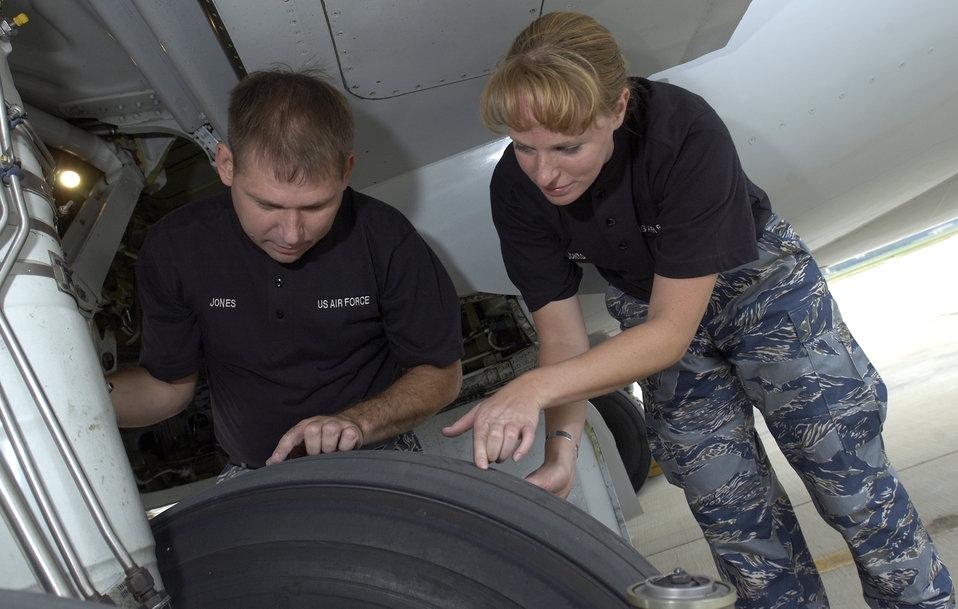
Stone and Sullivan

ANDREWS AIR FORCE BASE, Md. (AFPN) -- Tech. Sgt. Thomas Stone (left) and Capt. Rachel Sullivan, both with the 89th Maintenance Group here, give the optional Henley-style T-shirt a try while putting the test utility uniform through its paces on the flightline here. The blue, gray and green tiger-stripe camouflage ensemble includes many new features intended to increase functionality while providing a distinctive look for the 21st century airmen. The uniforms will undergo wear-testing beginning in January 4. Airmen from a cross section of Air Force career fields will provide feedback on the fit, durability and functionality of the proposed ensemble which will come in men's and women's cuts.